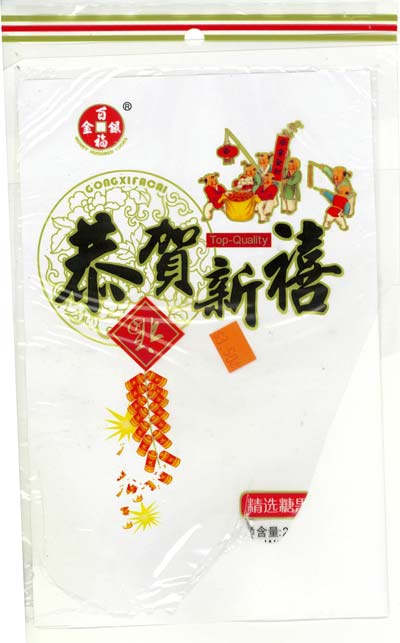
RECALLED – Gong xifacai gift chocolates

June 17, 2014 – Domega NY International Co Ltd Issues Allergy Alert On Undeclared Peanuts And Milk In Gong Xifacai Gift Chocolates.